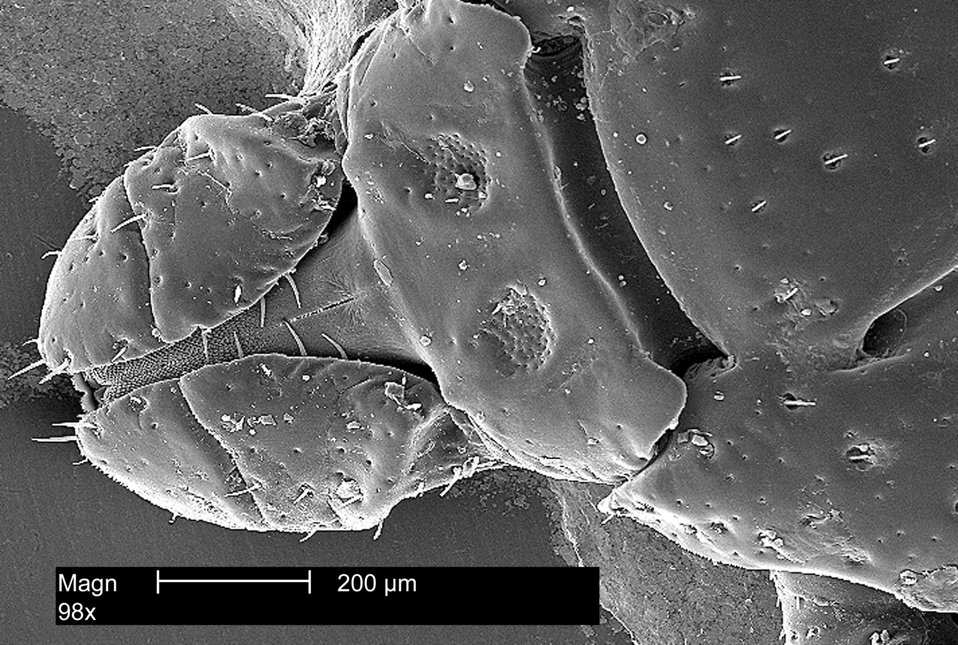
Dorsal view of the head region from an American Dog Tick, Dermacentor variabilis, magnified 98x.